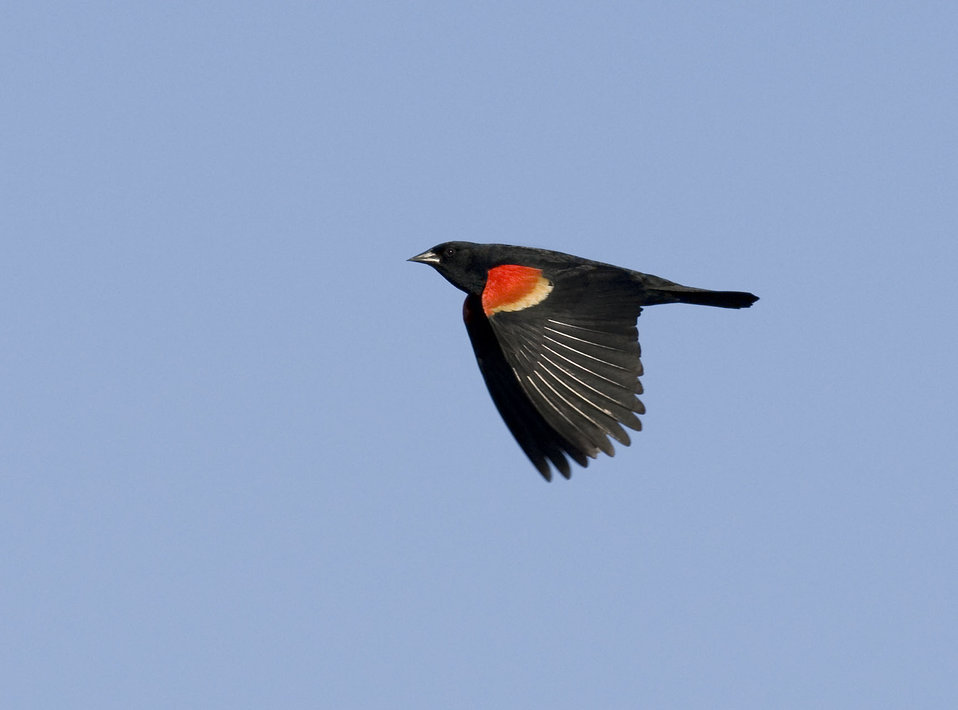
Red-winged Blackbird in Flight

The lands of the refuge were established to protect and provide habitat for migratory birds that cross State lines and international borders and are by law a Federal trust responsibility.

The refuge is of great value to waterfowl and shorebirds, as well as other migrating water-dependent bird species, because of the diversity of wetland and upland habitats that provide for the diverse life cycle needs of these species.